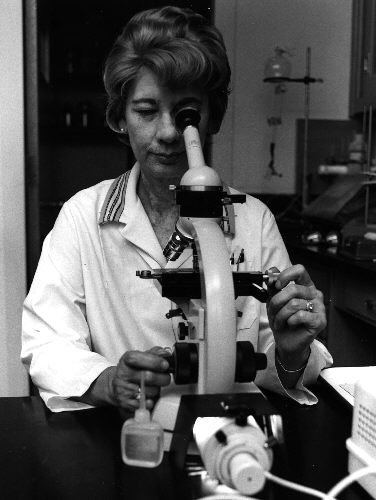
CDC Laboratorian